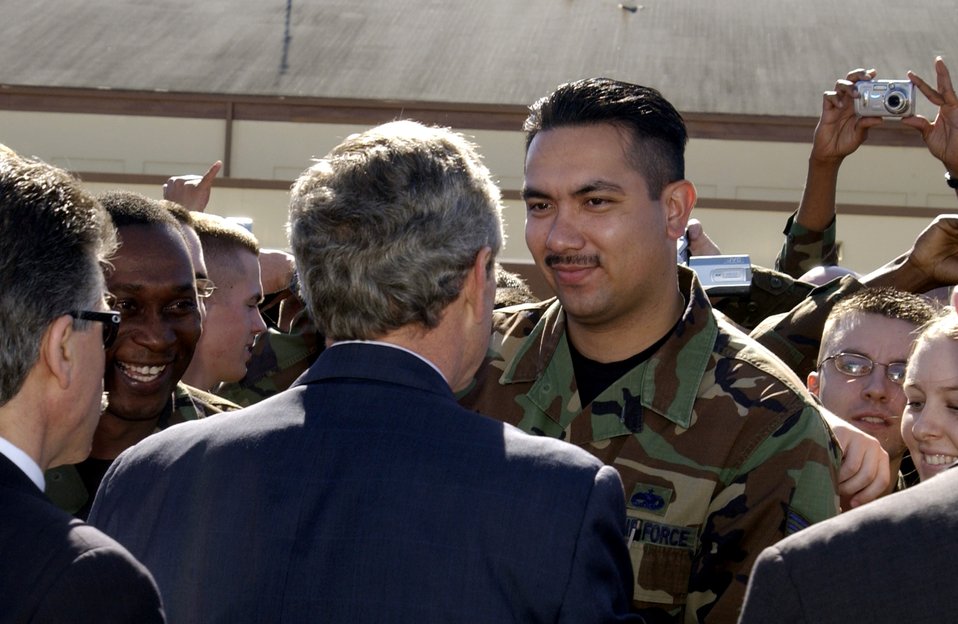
Bush breezes through Barksdale

BARKSDALE AIR FORCE BASE, La. -- President George W. Bush greets Staff Sgt. Arthur Pancoast here after holding a town hall meeting in nearby Shreveport on March 11. Sergeant Pancoast is assigned to the 2nd Communications Squadron.